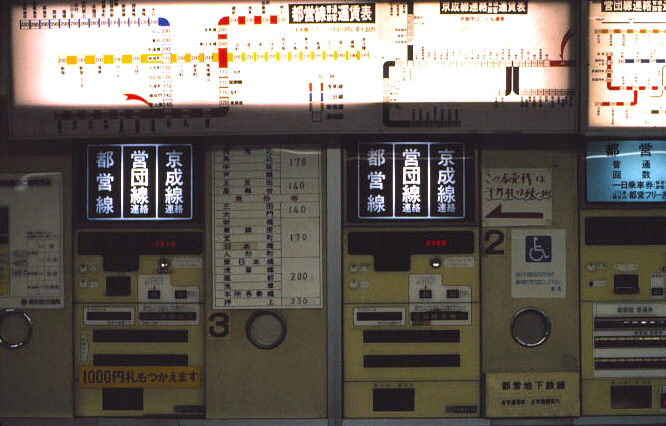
Tokyo subway fare machine.